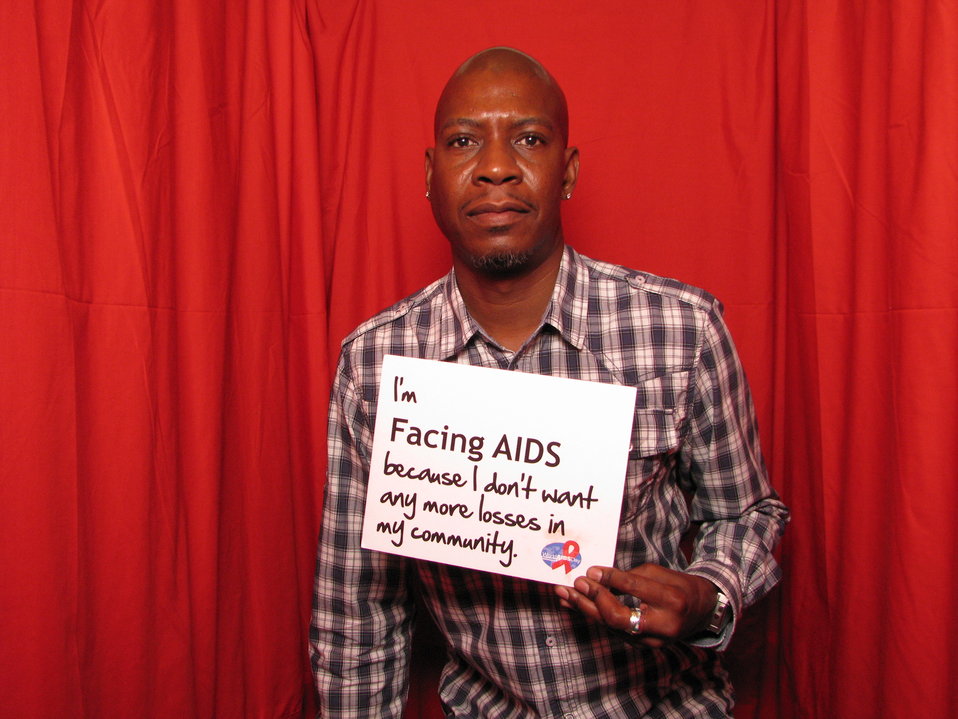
I'm FACING AIDS because I don't want any more losses in my community.

From the AIDS.gov photo booth at the U.S. Conference on AIDS, September 2010 (Orlando, FL).